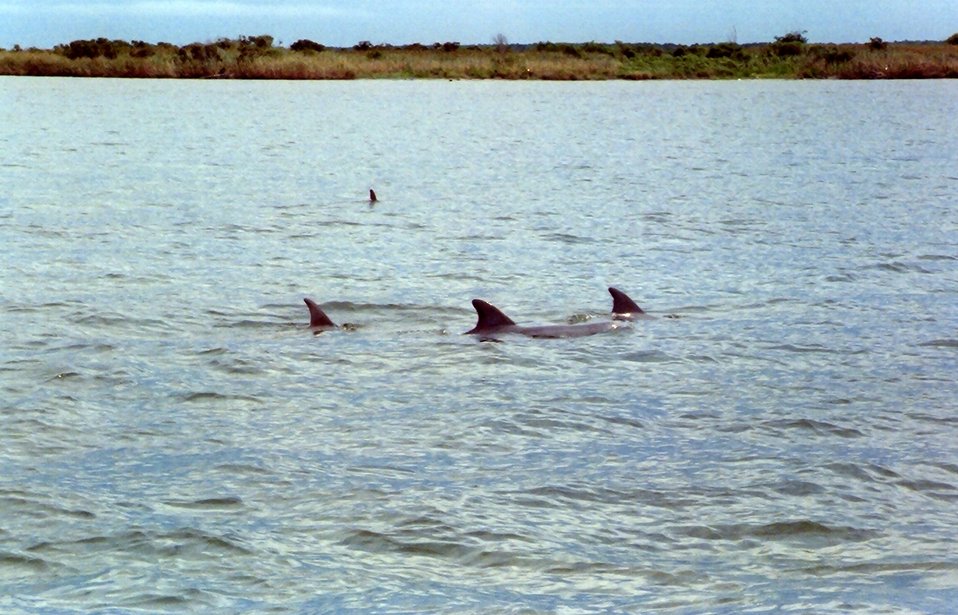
Dolphin caudal fins.